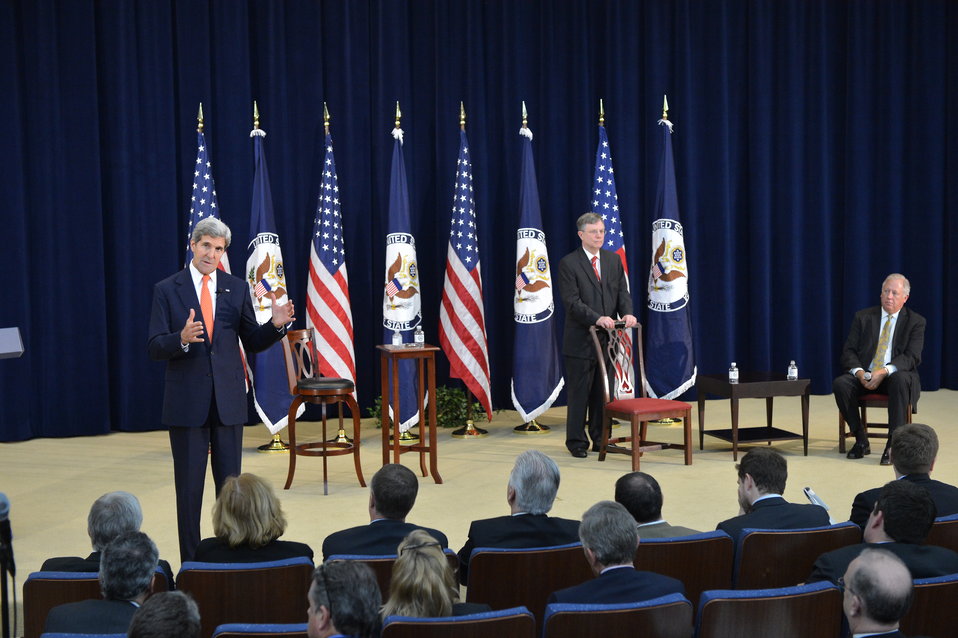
Secretary Kerry Speaks With State Department Employees

U.S. Secretary of State John Kerry responds to questions from employees during a town hall at the U.S. Department of State in Washington, D.C., on October 28, 2013.